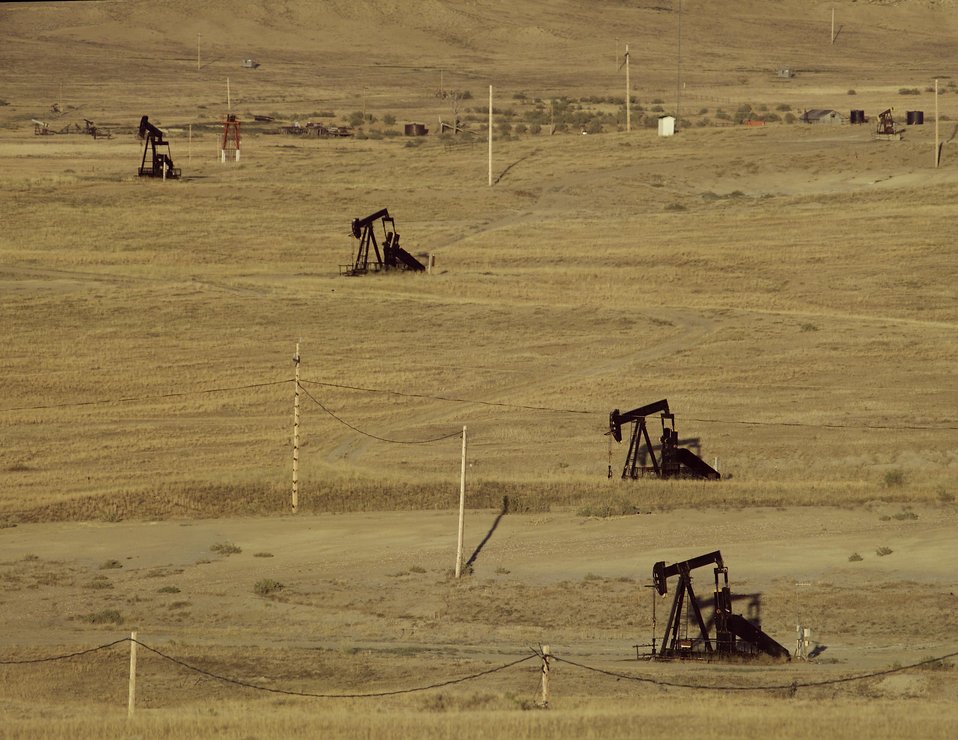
Pump jacks dot the landscape at Naval Petroleum Reserve No.3 (NPR-3) near Casper, Wyoming.

The Rocky Mountain Oilfield Testing Center (RMOTC) is a Department of Energy field test site for emerging and developing technologies to address critical energy issues. The field test site, located on Naval Petroleum Reserve No.3 (NPR-3), is a 10,000-acre site. There are approximately 700 well bores with 600 producing wells ranging in depth from 500 to 5,000 feet.